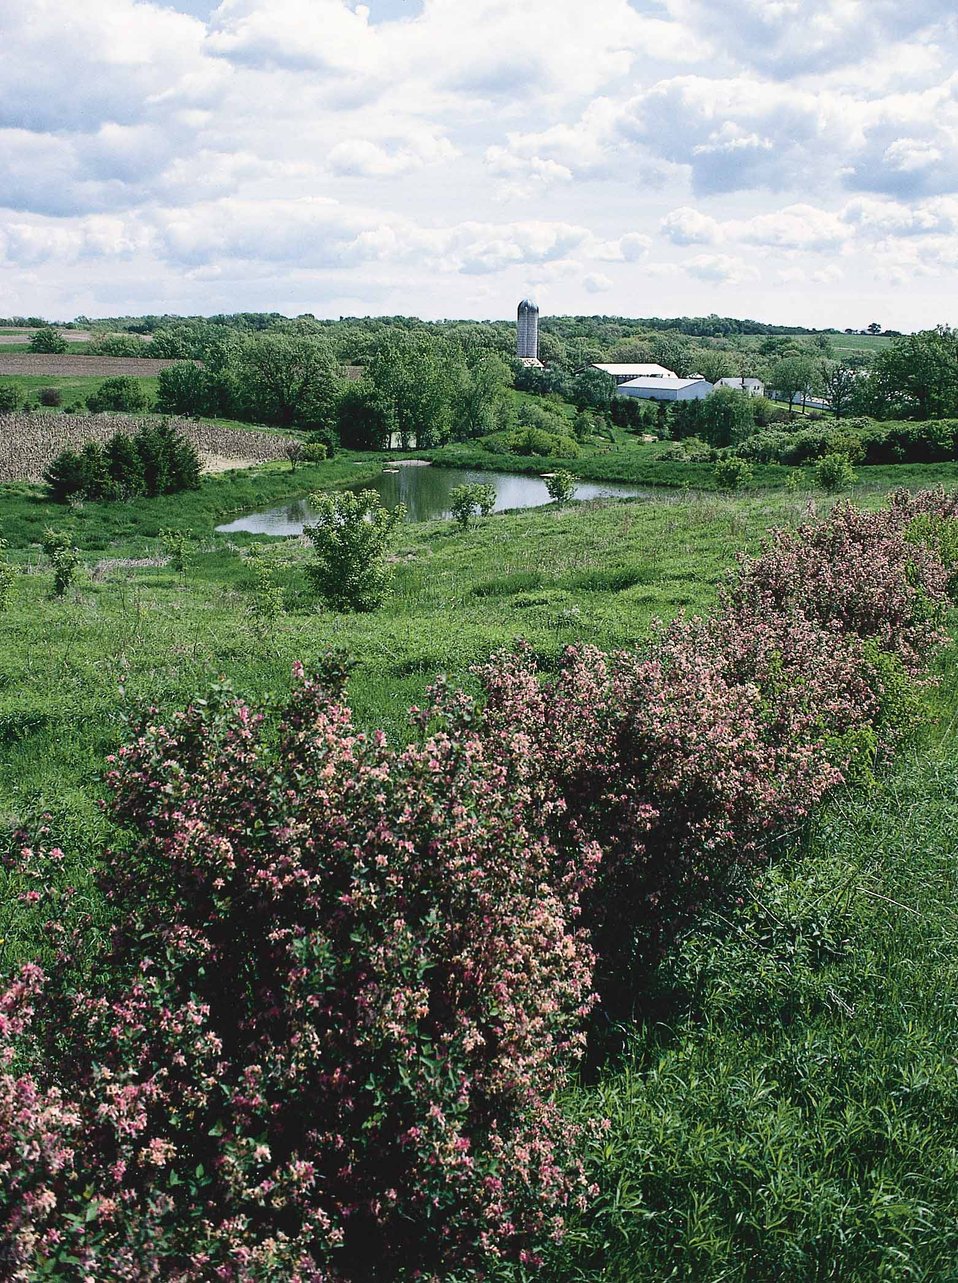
Wildlife habitat in this wildlife area in Jackson County, Iowa, includes shrubs and trees, grasses, a pond, and a food plot of corn.